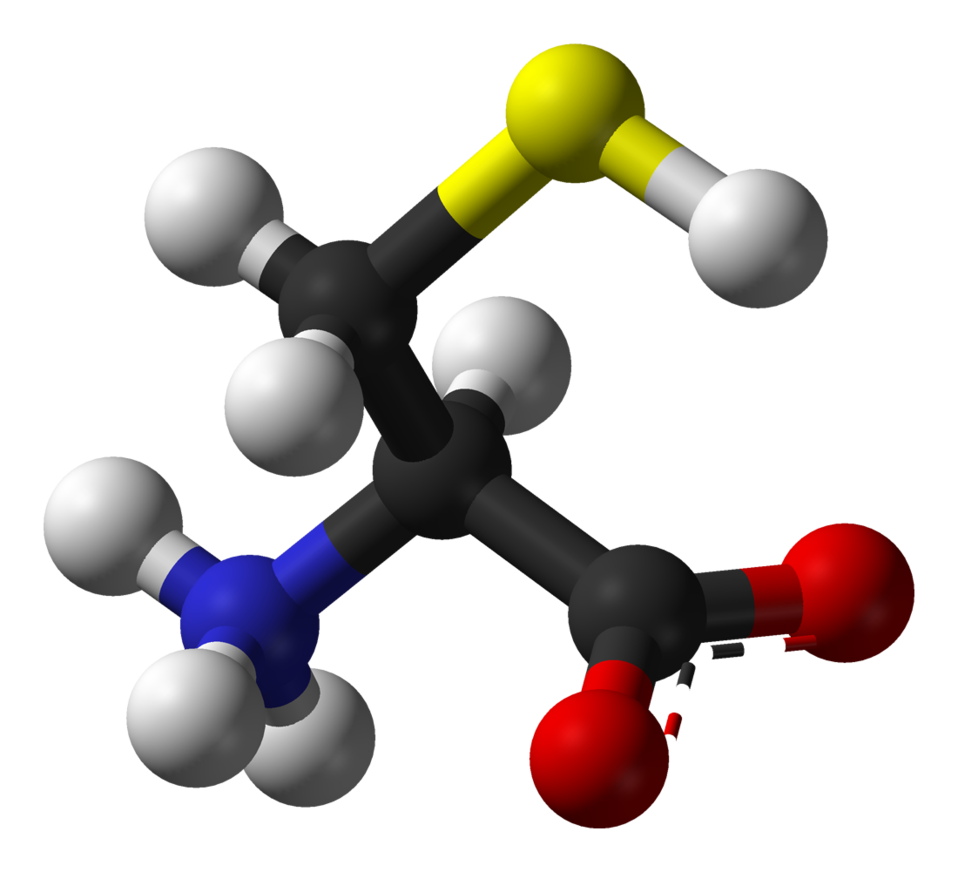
L-cysteine-zwitterion-3D-balls